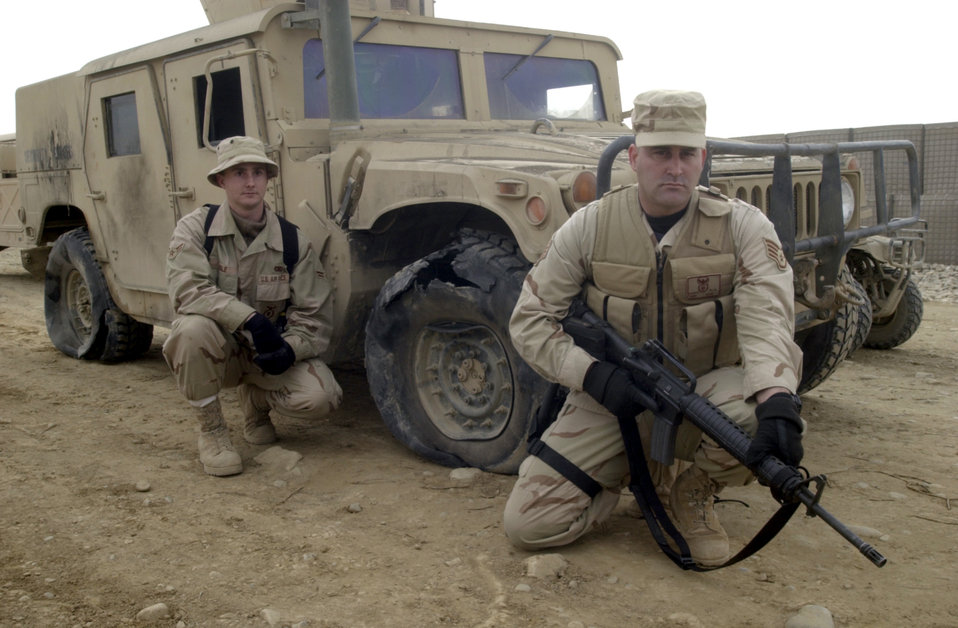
Patrolling the area

BAGRAM AIR BASE, Afghanistan -- Staff Sgt. Michael Klinkert (right) and Airman 1st Class Christopher Coble were driving this heavily armored Humvee at about 8 p.m. Jan. 5 when they entered an unmarked minefield here. Explosions rocked the vehicle and they were stranded for about two hours until a mine-clearing vehicle was sent in. Sergeant Klinkert and Airman Coble are security forces specialists assigned to the 455th Expeditionary Operations Group here. Both are deployed from Holloman Air Force Base, N.M.